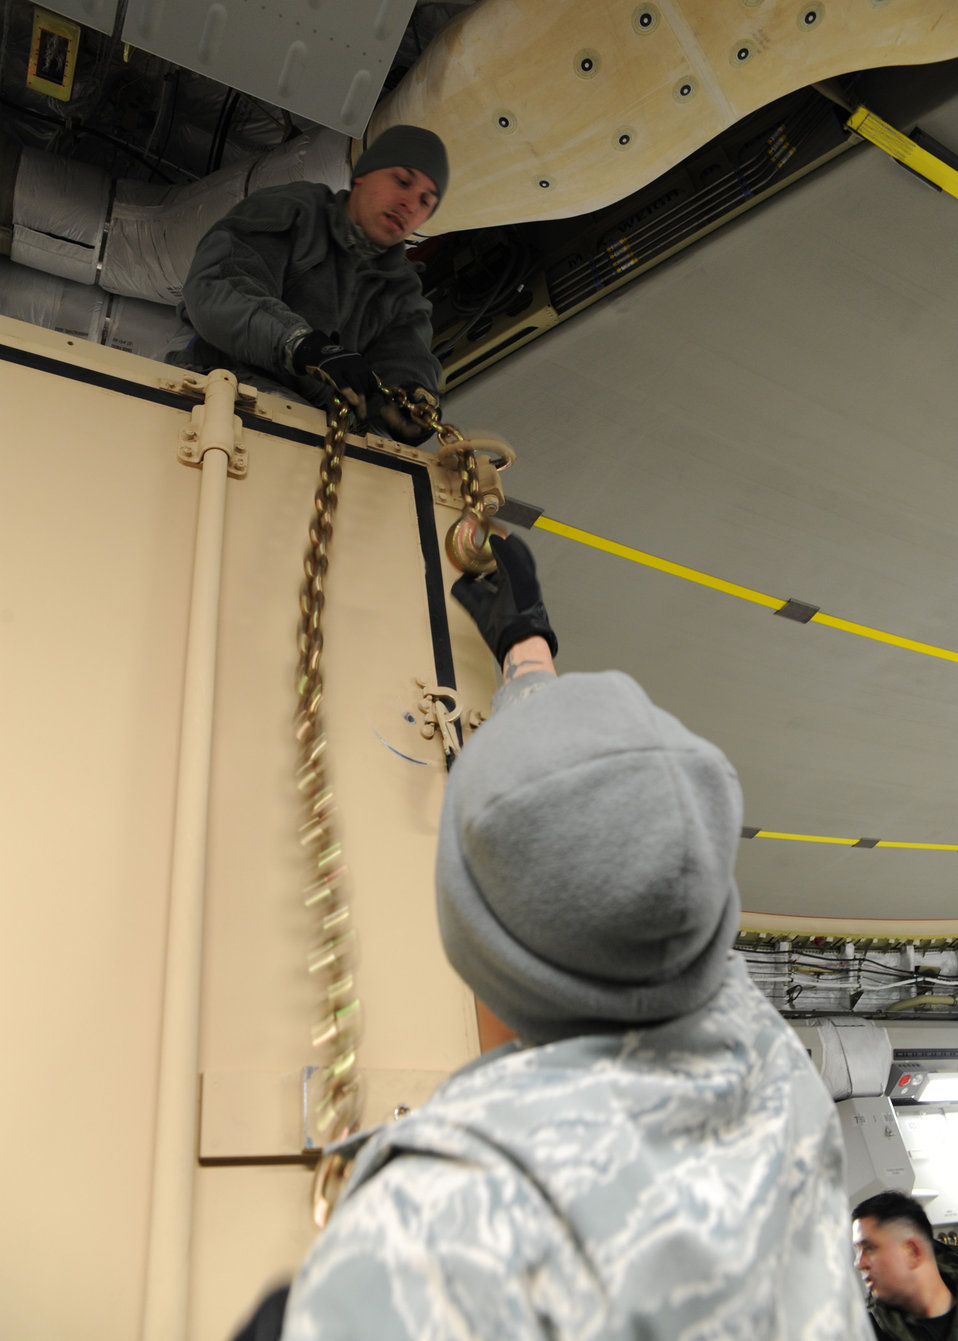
Haiti Humanitarian Effort

Tech. Sgt. Jeremy Morris and Senior Airman Christopher Williams chain down a mobile command and control unit onto a Charleston C-17 at Joint Base McGuire-Dix-Lakehurst, New Jersey, Jan. 15, 2010. The Charleston C-17 was used to transport equipment needed to aid the humanitarian effort in Haiti. Sergeant Morris and Airman Williams are with the 305th Aerial Port Squadron.